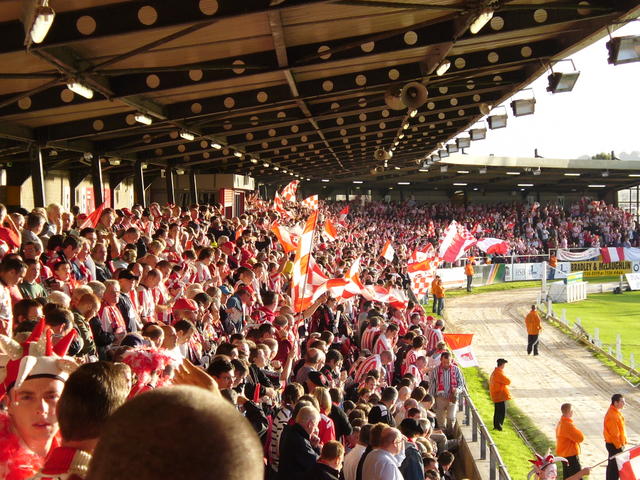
Personal photo of Brandywell.